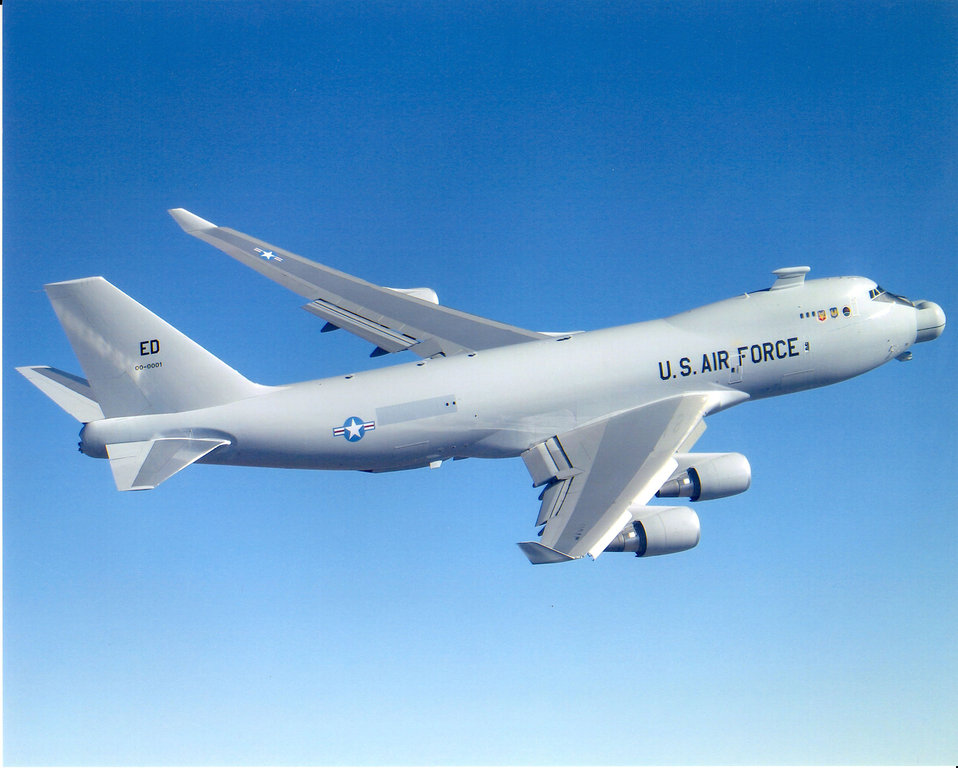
Airborne Laser fires tracking laser

The YAL-1A Airborne Laser, which recently completed an extensive round of laser system flight tests, has reached a key milestone in preparing to fire the system's chemical oxygen iodine laser, or COIL, against an in-flight ballistic missile. The COIL is a missile-killing, high-energy chemical laser.